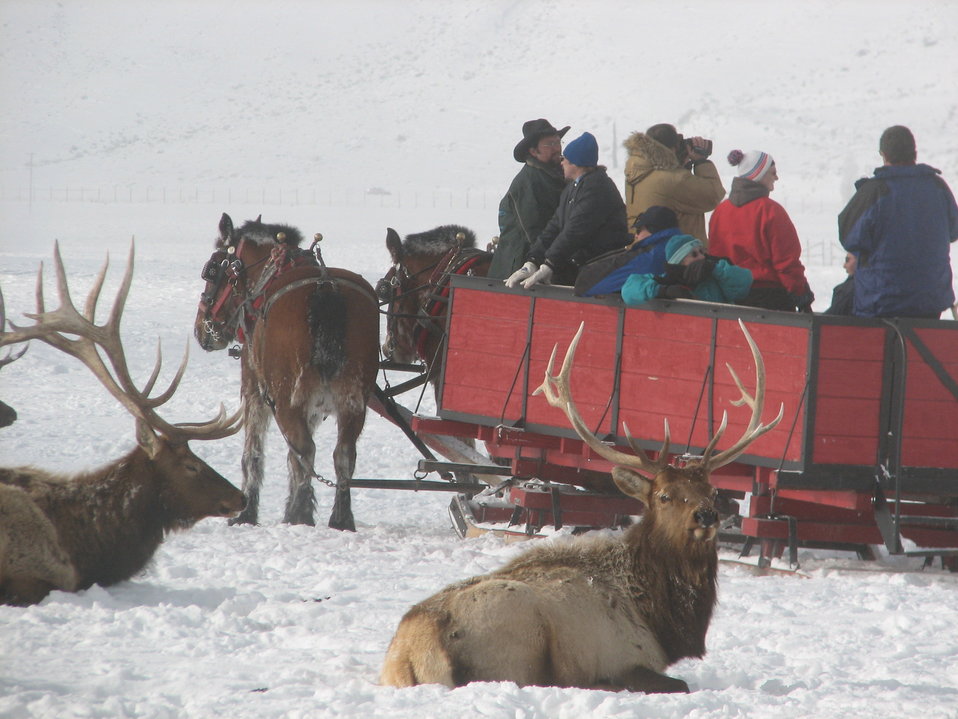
Sleigh Rides Provide Up-Close Elk Viewing Opportunities

Group of visitors enjoy a sleigh ride that takes them close to the elk herd. Sleigh riders must remain in the sleighs at all times and must remain quiet. In many cases, visitors have never had the opportunity to view wildlife in such close proximity.